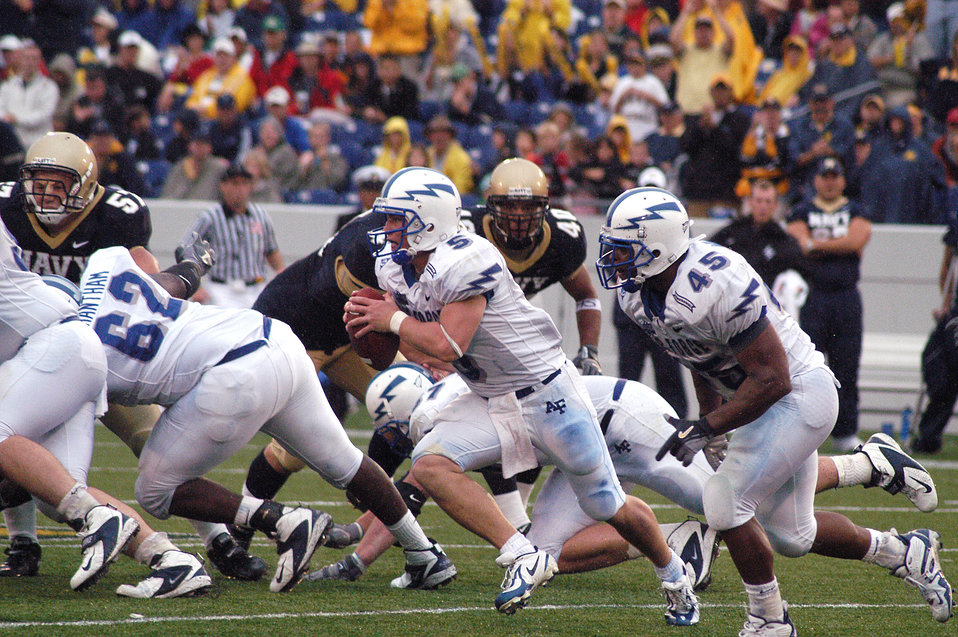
Midshipmen cage Falcons, 27-24

ANNAPOLIS, Md. -- Air Force quarterback Shaun Carney looks for a hole in the Navy defensive line to run through. Navy defeated Air Force 27-24.